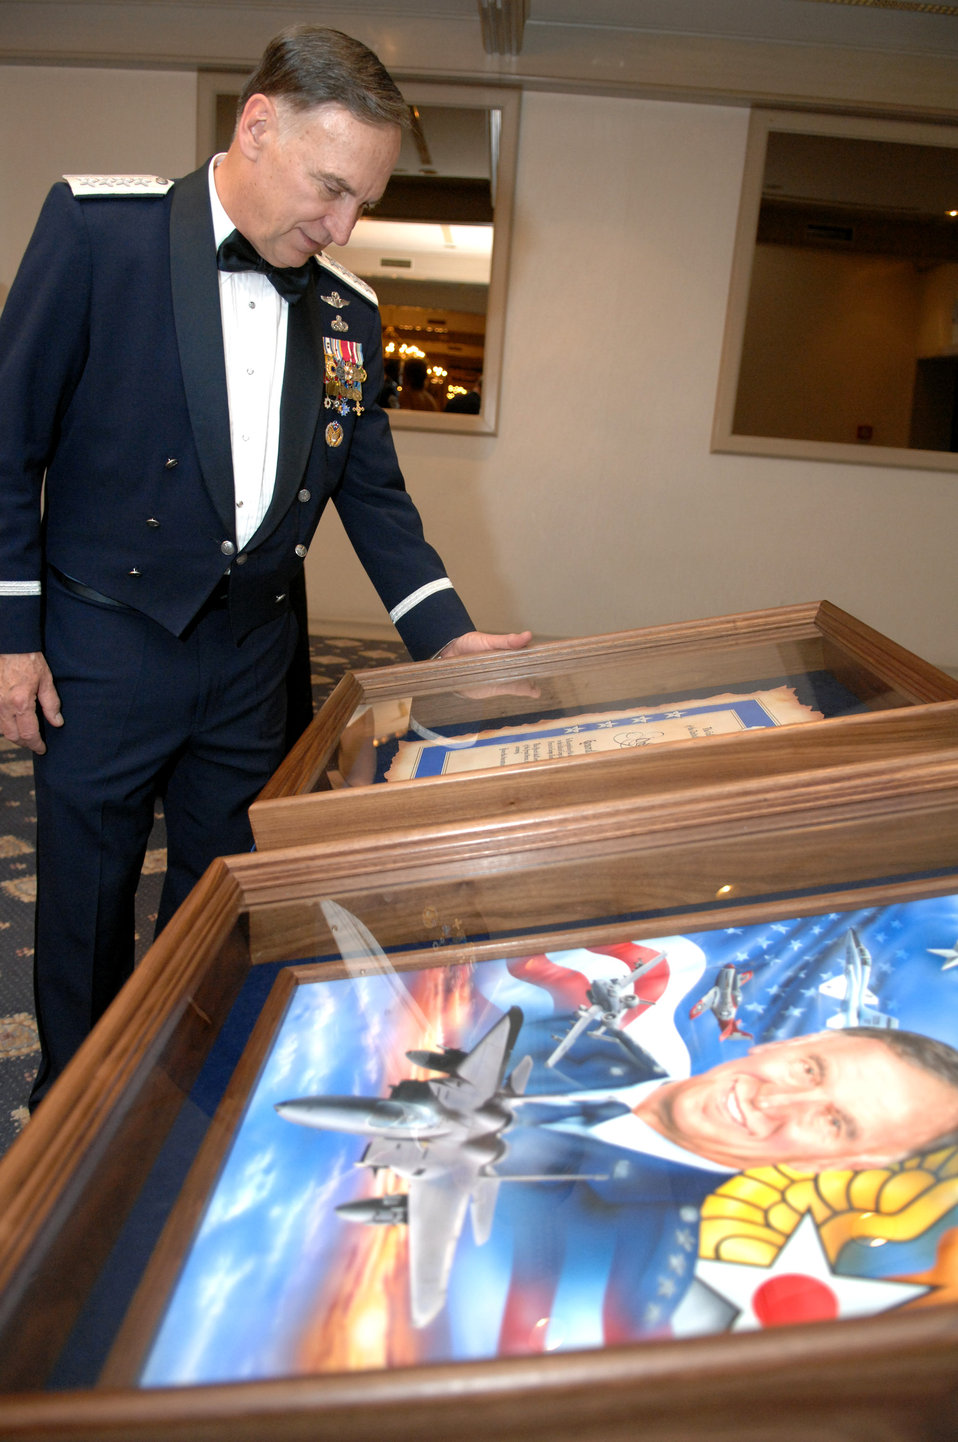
Gen. Hobbins honored with Order of the Sword

Gen. William T. Hobbins, U.S. Air Forces in Europe commander, admires some of the gifts he received during a USAFE Order of the Sword induction ceremony in his honor. The Order of the Sword induction is the highest honor the enlisted corps can bestow on an individual.